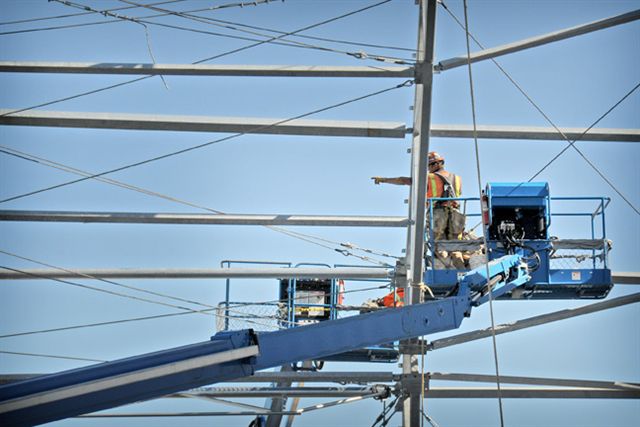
RAN ARP RWMC S123 ARPVI STEELERECTION 070610 P6558-003 A